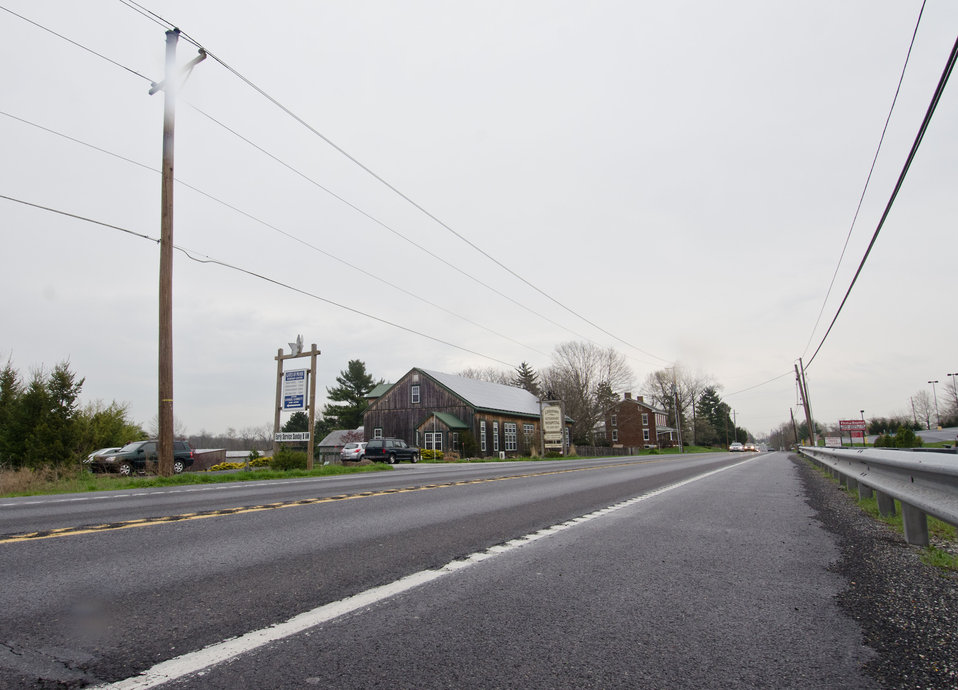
105 solar panels are installed at Littlestown Veterinary Hospital in Littlestown, PA, in mid September 2010. The Littlestown Veterinary Hospital in Littlestown, PA, received a grant from the U. S. Department of Agriculture, Rural Development under the Rural Energy for America Program (REAP) to have solar panels installed to help reduce their carbon footprint and to have cost effective electric power for the hospital. REAP provides grants for energy audits and renewable energy development assistance. The program also provides funds to agricultural producers and rural small business to purchase and install renewable energy systems and make energy efficiency improvements. The expected cost savings using solar power for the hospital’s electrical needs is expected to reduce the facility’s operating expenses by 30%-40%.